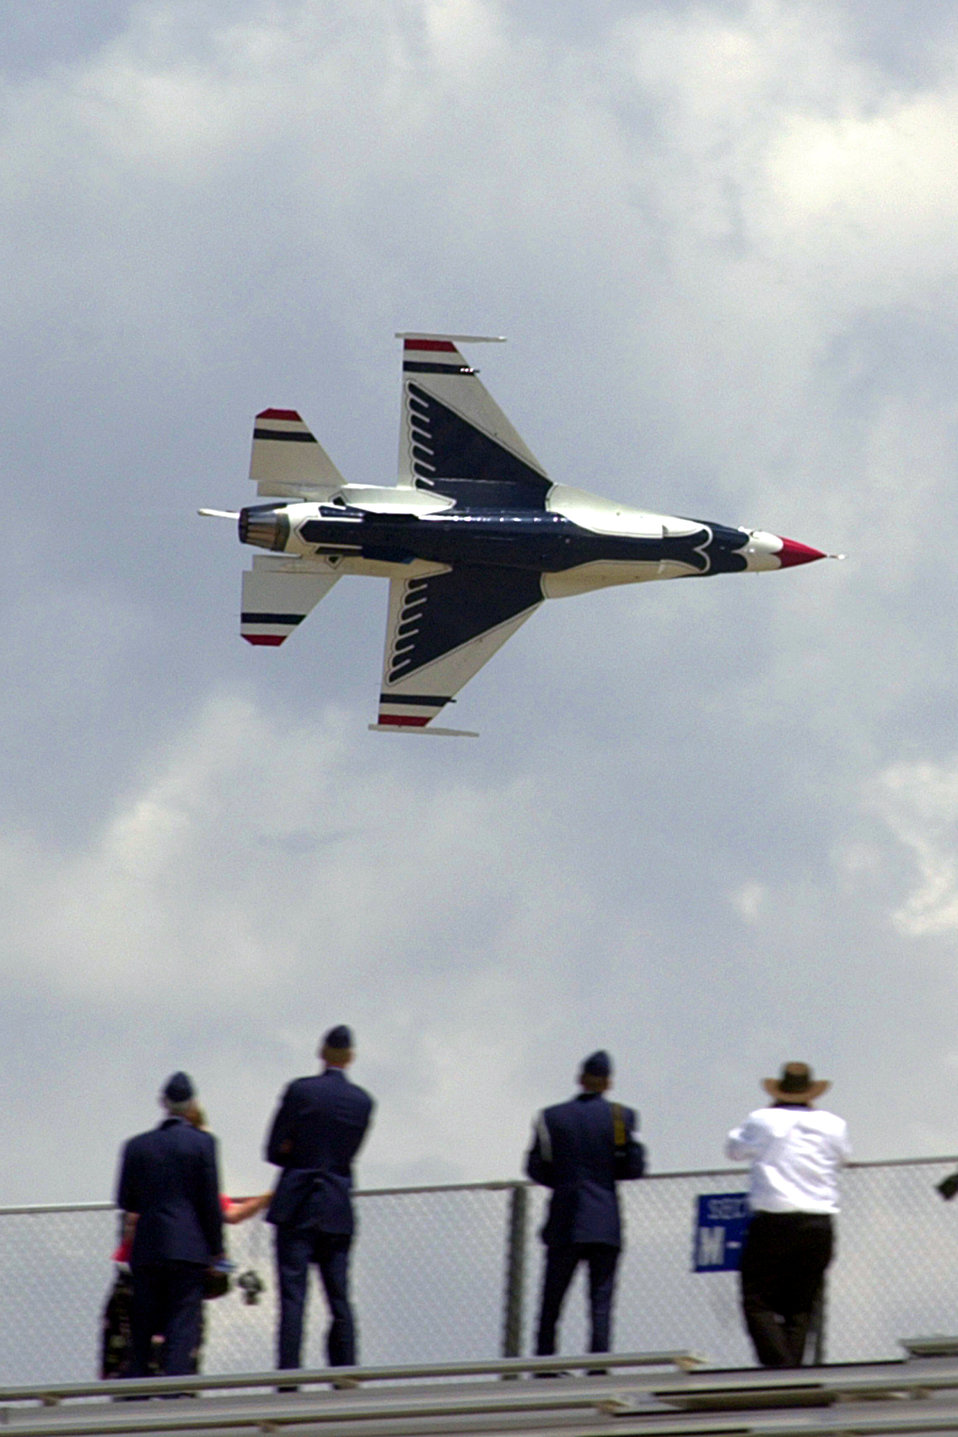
Thunderbird up close

U.S. AIR FORCE ACADEMY, Colo. -- An F-16 Fighting Falcon from the Air Force Thunderbirds speeds past observers at the Air Force Academy.